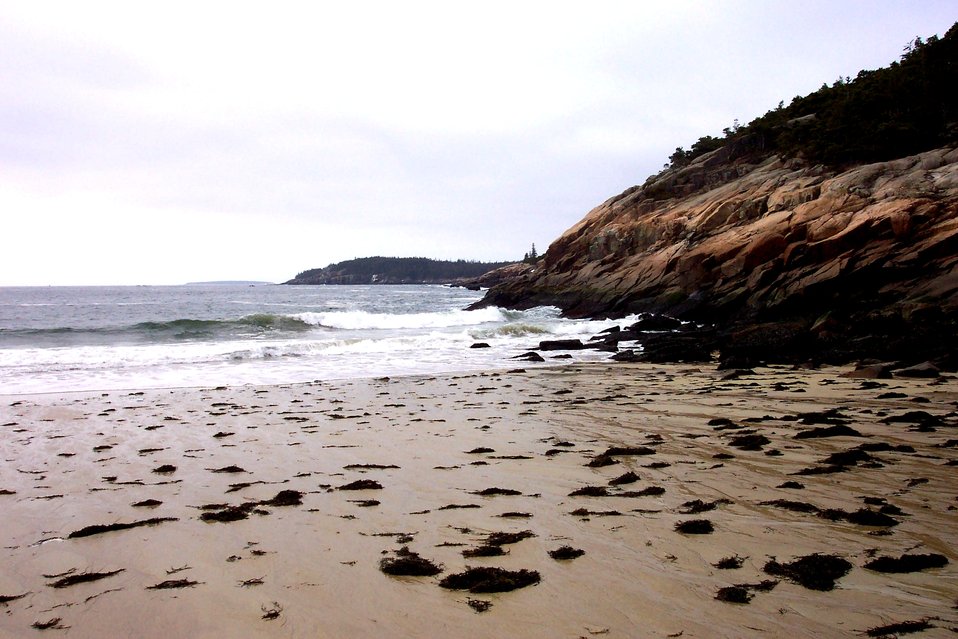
On the western side of Sand Beach looking south towards Thunder Hole area.